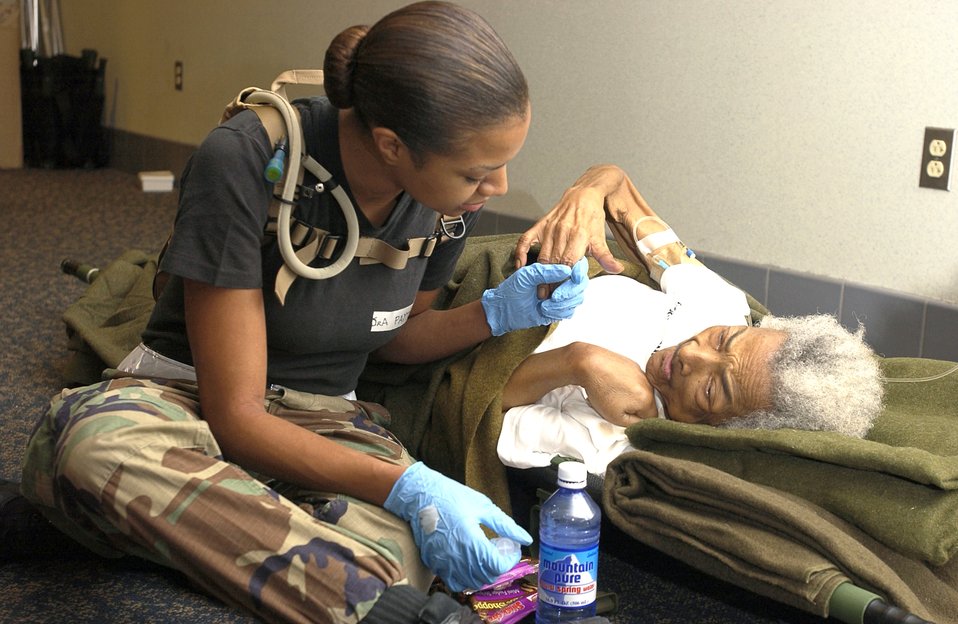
Caring compassion

LOUIS ARMSTRONG NEW ORLEANS INTERNATIONAL AIRPORT -- Senior Airman Portia Payton talks to hurricane evacuee Betty Porter here Sept. 4. Airman Payton sat with Ms. Porter for almost four hours while talking, feeding and offering her water before her aeromedical evacuation flight to Lake Charles, La. Airman Payton is a medical technician from the 59th Medical Wing at Lackland Air Force Base, Texas.